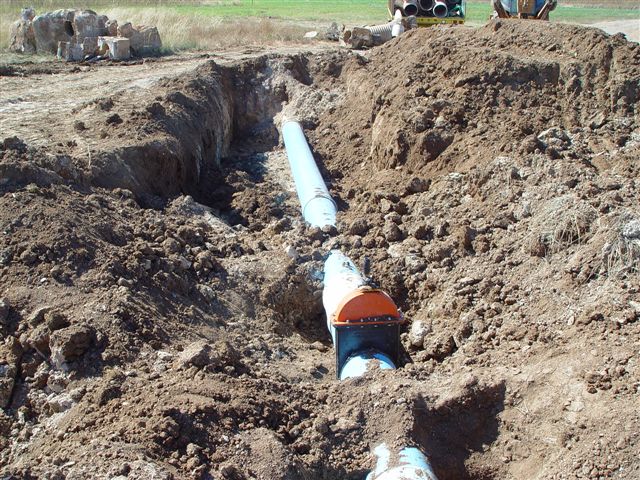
Las Vegas 9

A new series of pipes and a water monitoring system are shown at Las Vegas NWR in Las Vegas, N.M.. Deerfield Corp. of Albuquerque, N.M. completed the rehabilitation of a nine-mile water delivery and pipeline system in November as part of a Recovery Act-funded project at the refuge.